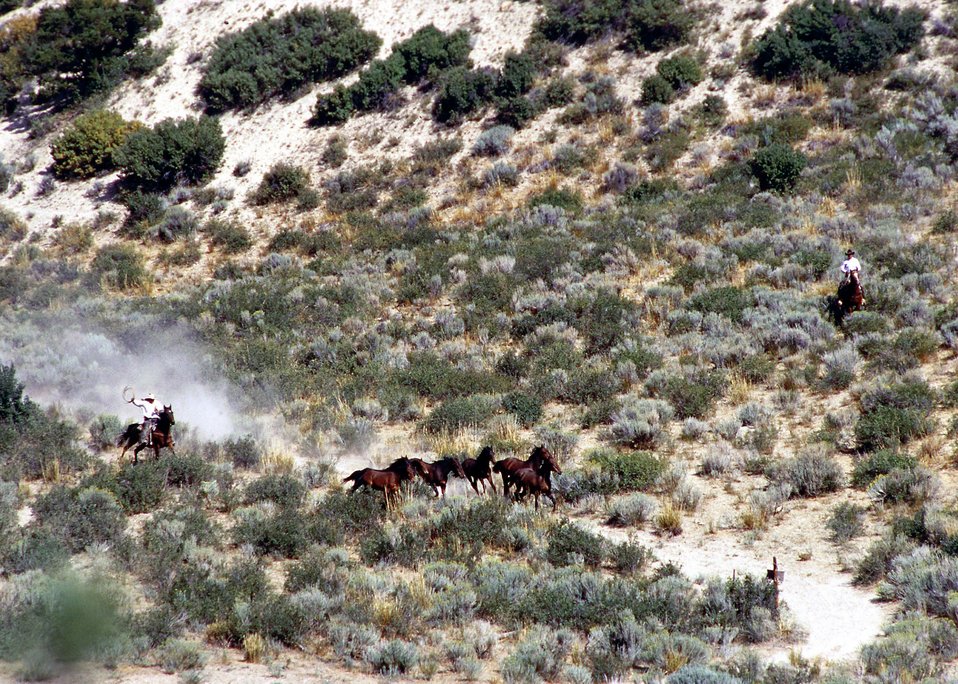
Horses